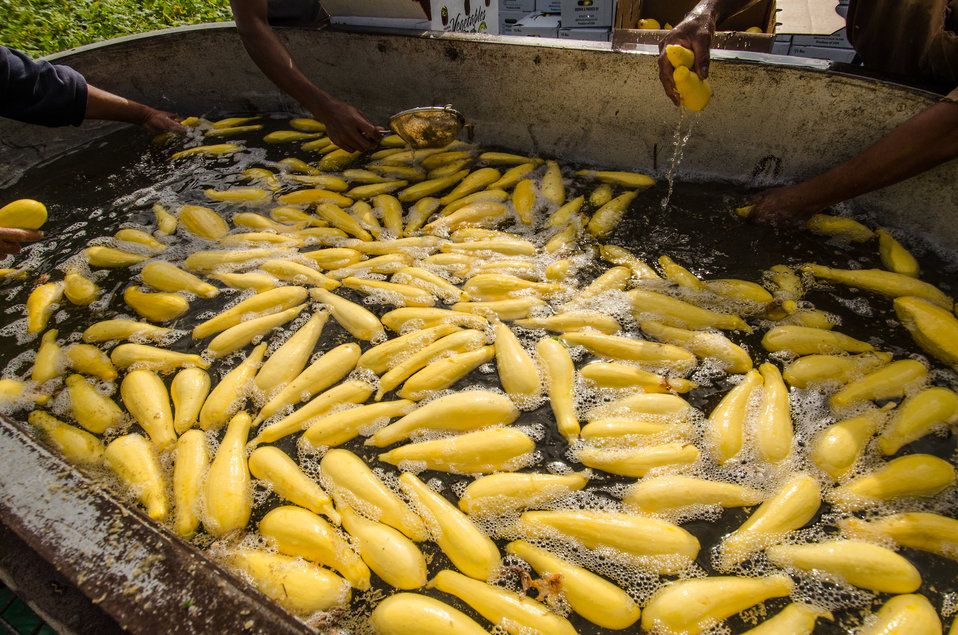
Migrant workers rinse and pack just-picked yellow squash on a processing trailer at Kirby Farms in Mechanicsville, VA on Sep. 20, 2013. Kirby Farms is a third-generation family farm that covers 500 acres, and generates produce and grains on a year-around operation.